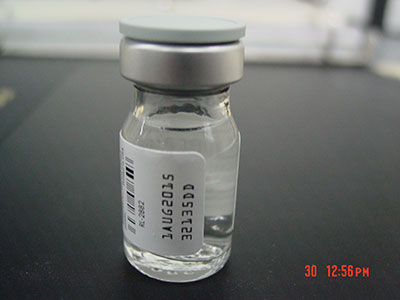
Recalled - Lidocaine HCl

December 23, 2013 – Product Recall – Hospira Issues a Voluntary Nationwide Recall of One Lot of Lidocaine HCl Injection, USP, 2%, 5 Ml in 5 Ml Vial, Due to Presence of Particulate Matter.